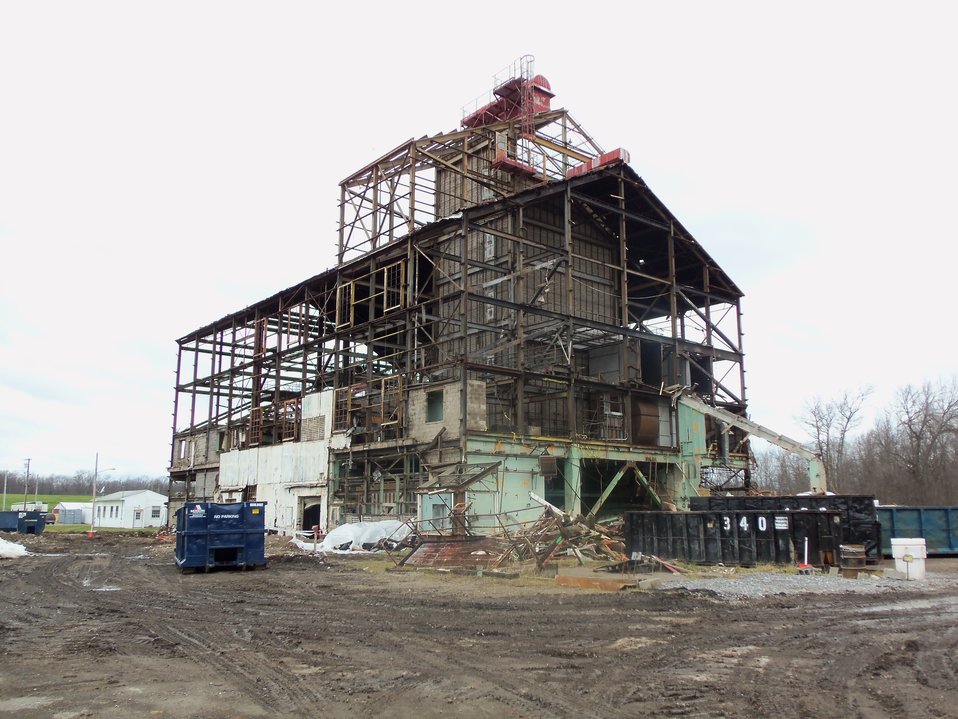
BLDG 401 SHELL

Activities from the Niagara Falls Storage Site, which is associated with the former Lake Ontario Ordnance Works. Formerly Utilized Sites Remedial Action Program (FUSRAP), a program initiated in 1974 to identify, investigate and clean up or control sites that were part of the Nation's early atomic energy and weapons program. Activities at the sites that are eligible for FUSRAP were conducted by Manhattan Engineer District (MED) or the Atomic Energy Commission (AEC), both predecessors of the Department of Energy (DOE). The U.S. Army Corps of Engineers was assigned management of FUSRAP by Congress in 1997.